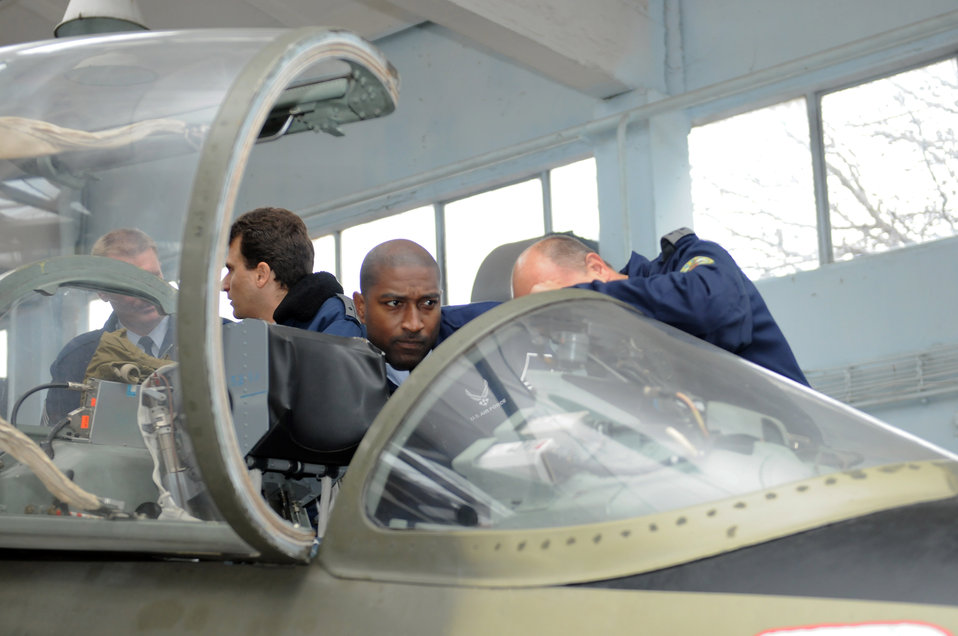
USAFE command chief builds partnership in Bulgaria

Master Sgt Timothy Barfield, learns about the capabilities of Bulgarian training aircraft during a visit to Dolna Mitropolya Air Force Training Base, in Bulgaria Nov. 6, 2009. Sergeant Barfield is the USAFE command chief executive assistant.